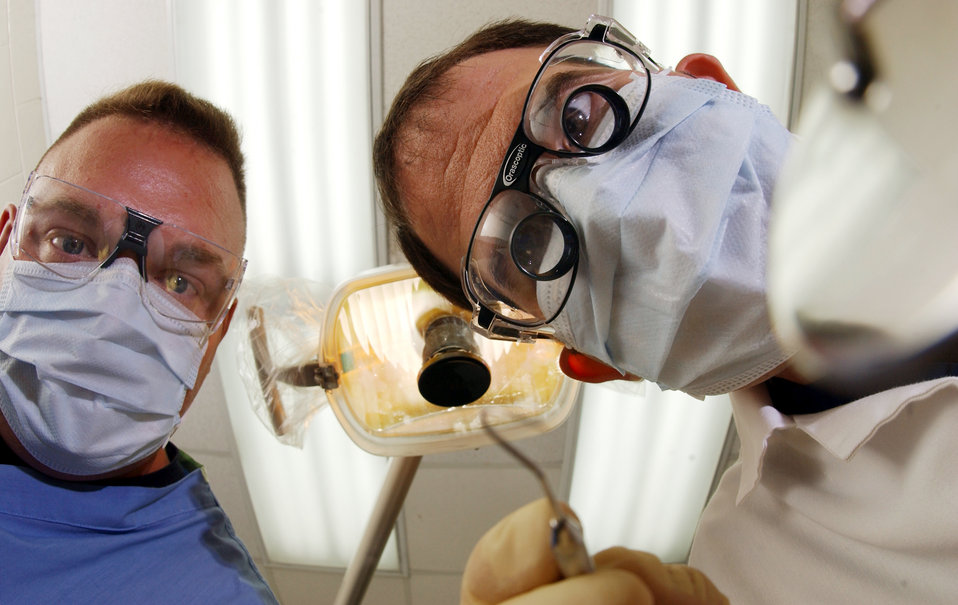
Open wide

KUNSAN AIR BASE, South Korea -- Tech. Sgt. Keith Briggs (left) and Capt. (Dr.) Roger Miller prepare to give a dental exam. They are assigned to the 8th Dental Squadron here.